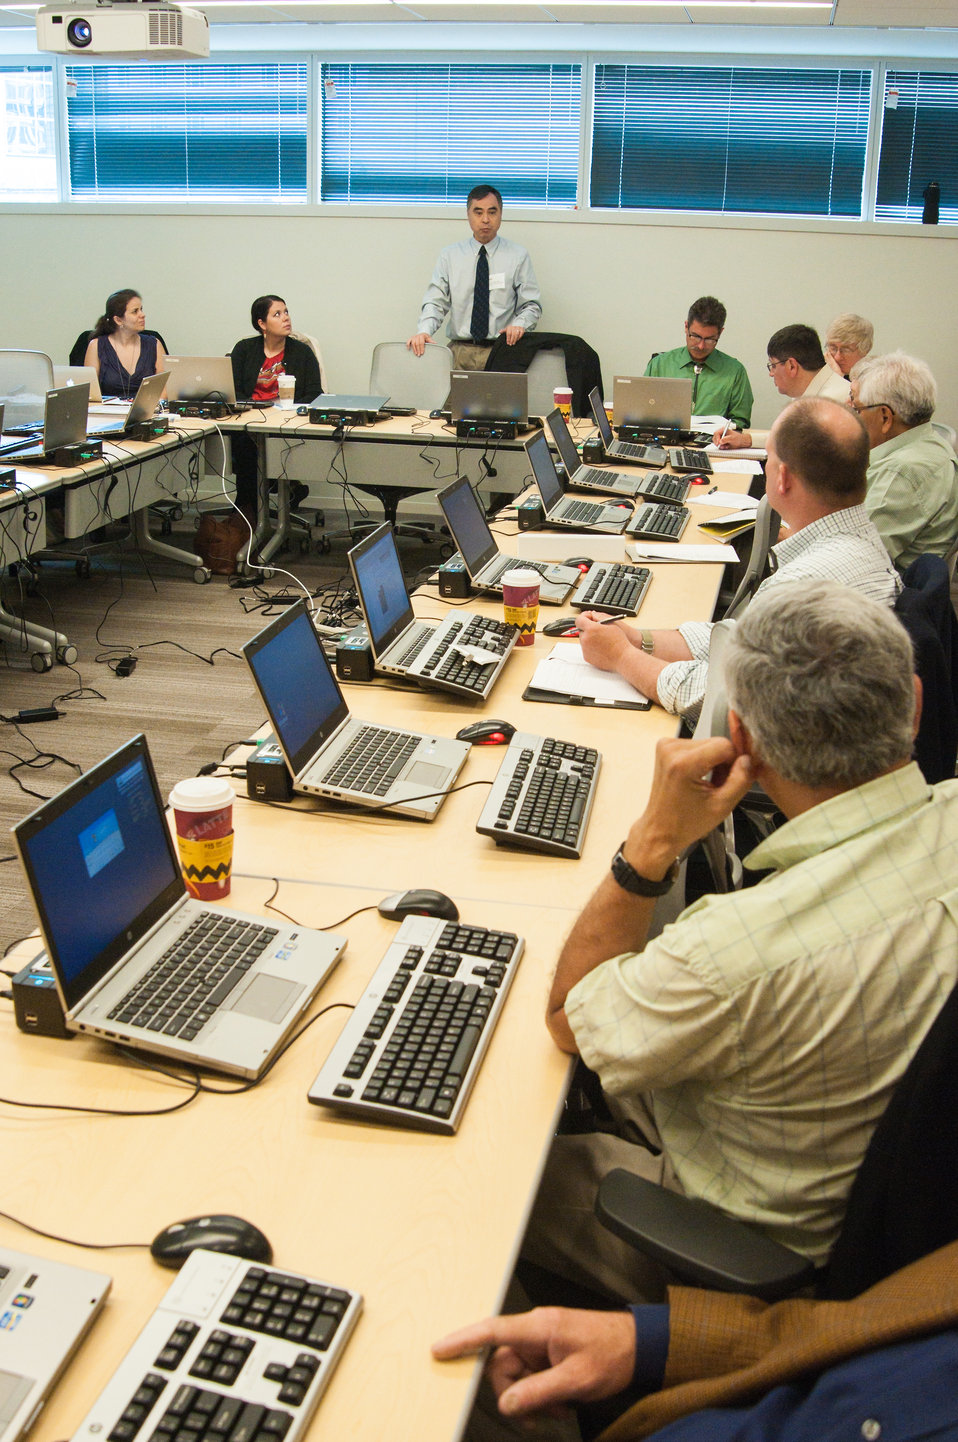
First American Land Grant Consortium (FALCON) Executive Director John Phillips discusses the potential with a FALCON/ U.S. Department of Agriculture (USDA) /1994 collaborative effort at the USDA 2013 Land-Grant Development Tribal Fellows Program held in Washington, D.C. on Monday, Jun.03, 2013.